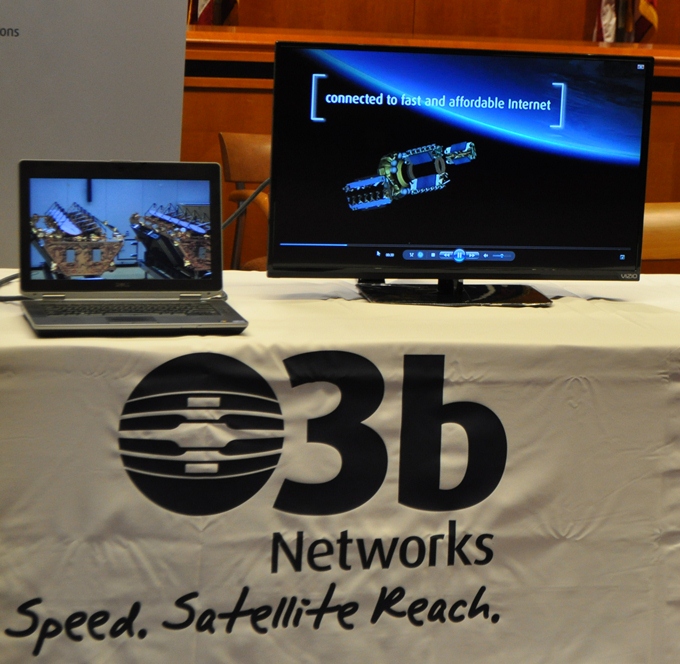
5.14.2014 Satellite Technology Demonstration

Satellite Technology Demonstration at FCC